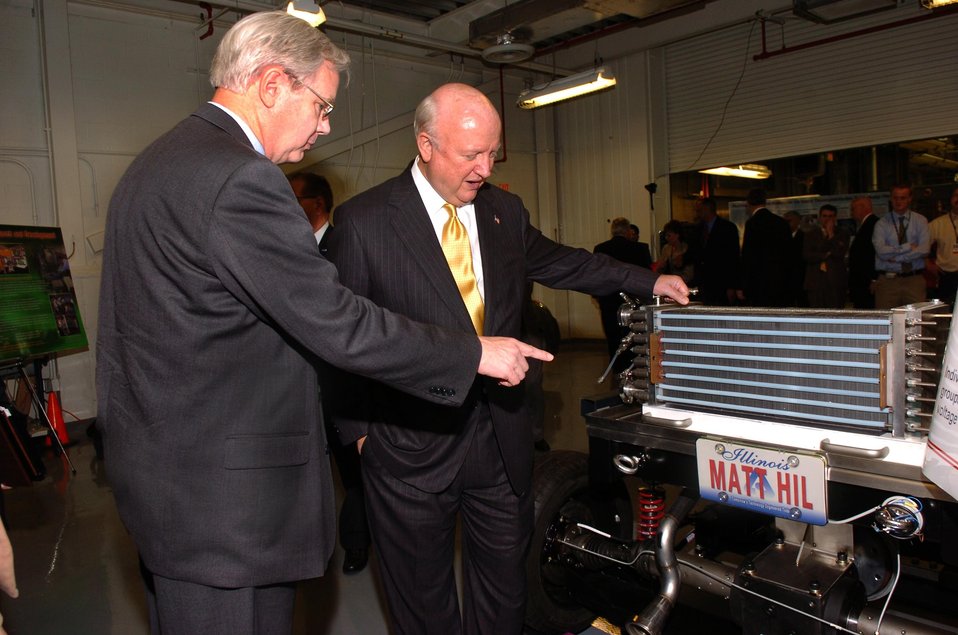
SECRETARY OF ENERGY BODMAN OBSERVING MATT HIL, ARGONNE'S MOBILE AUTOMOTIVE TECHNOLOGY TESTBED HARDWARE-IN-THE-LOOP.

LARRY JOHNSON, DIRECTOR OF ARGONNE'S TRANSPORTATION R&D CENTER GUIDES THE SECRETARY THROUGH THE ADVANCED POWERTRAIN RESEARCH FACILITY. THE APRF AT ARGONNE IS THE NATION'S PREMIER HYBRID VEHICLE TEST LABORATORY, WHERE THE LATEST EQUIPMENT AND STATE-OF-THE-ART TRANSPORTATION TECHNOLOGY COME TOGETHER FOR DEVELOPMENT.